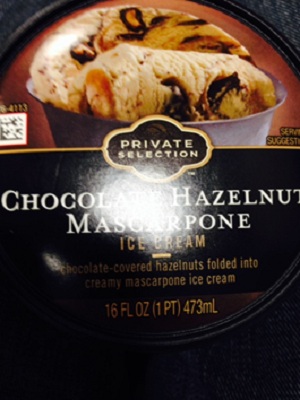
RECALLED – Chocolate Hazelnut Mascarpone Ice cream and Caramel Hazelnut Fudge Truffle Ice cream